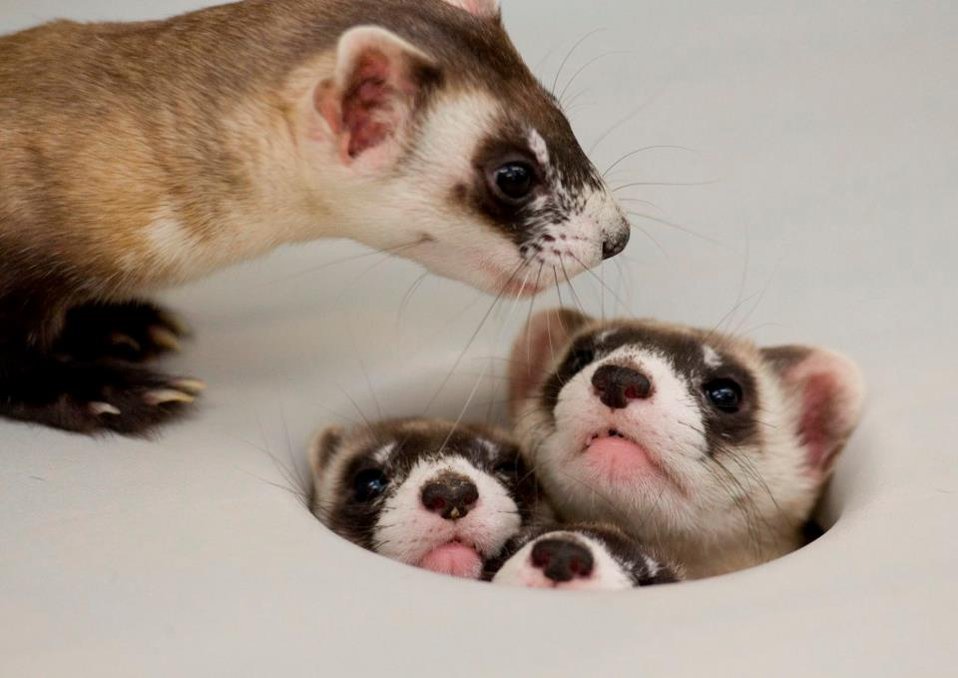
Mama Ferret Counts her Kits

Credit: Kimberly Tamkun / USFWS

Photo Contest Entry #197